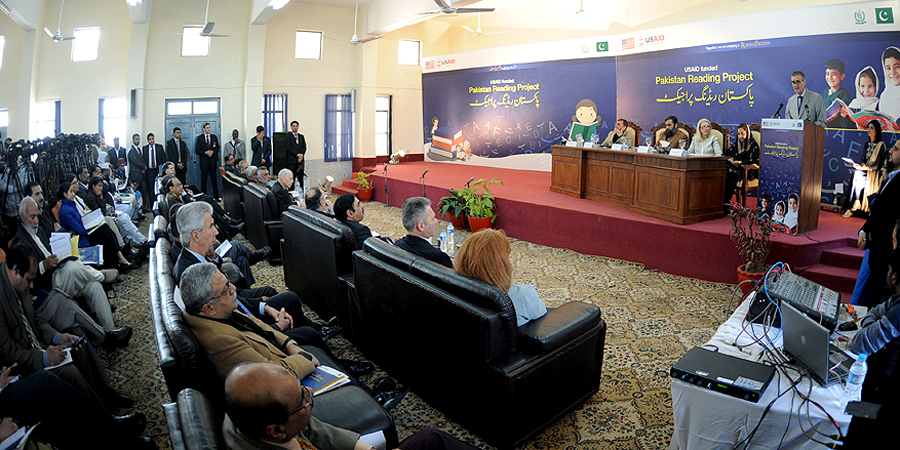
United States and Pakistan Launch the Pakistan Reading Project